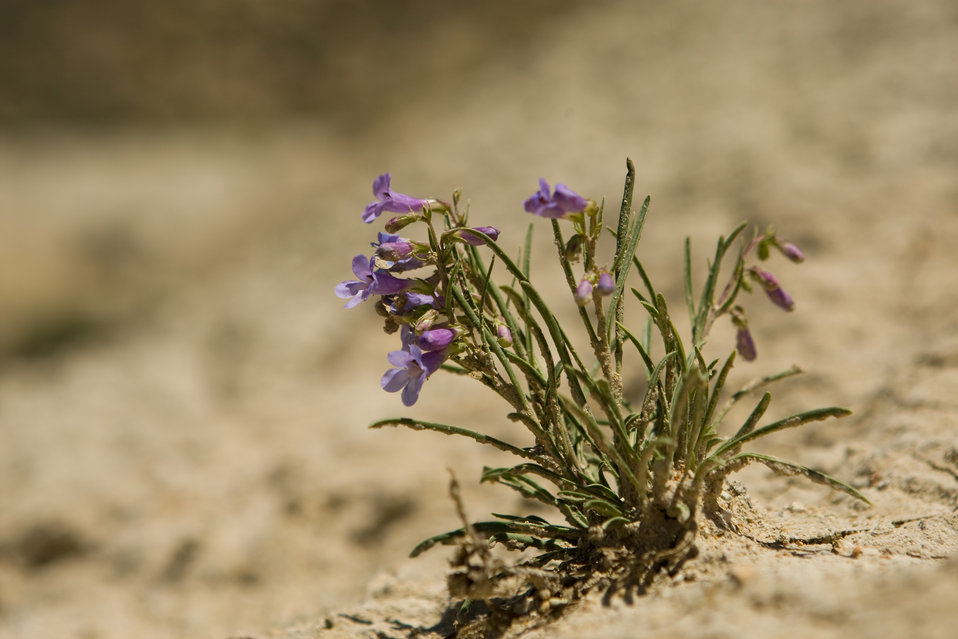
Colorado Rare Plant Conservation Initiative

The Colorado Rare Plant Conservation Initiative (RPCI) is a partnership of 23 statewide and regional agencies, private organizations, and academic institutions working to conserve 121 rare plants in Colorado. As part of these efforts the group developed the Colorado Rare Plant Conservation Strategy, developed Best Management Practices to reduce energy development impacts, addressed climate change, and developed focused strategies for the conservation of individual species at eight priority landscapes. The group has also worked to coordinate volunteer efforts for plant conservation across the state.